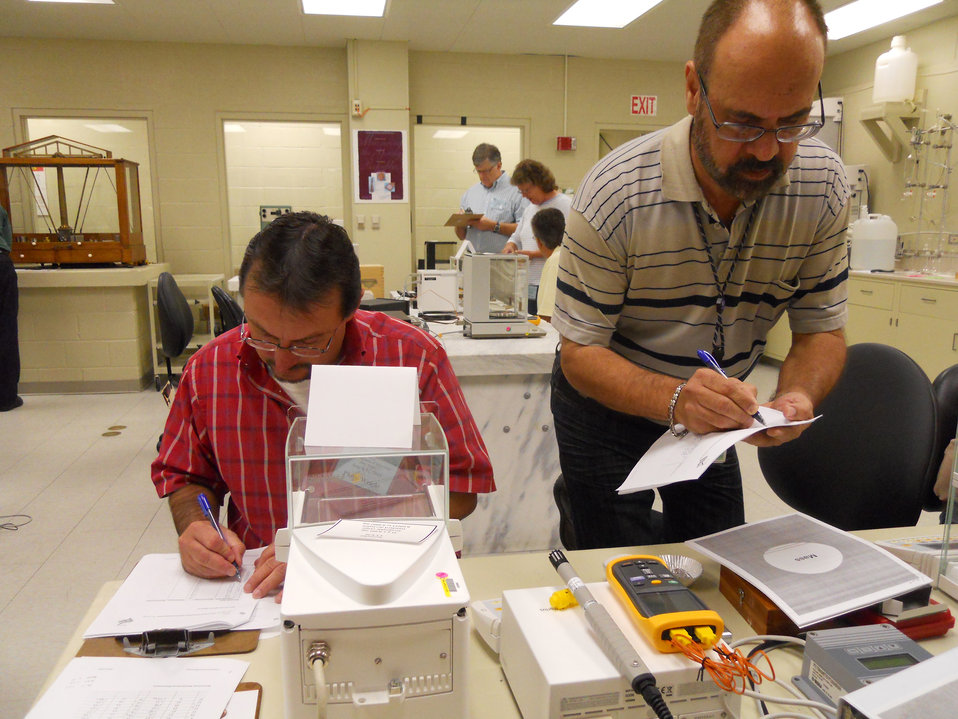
NIST Office of Weights and Measures Receives Important 'Continuing Education' Accreditation

Instructors José Torres and Phil Wright perform measurements during a dry run of the new Fundamentals of Metrology course being offered by the NIST Office of Weights and Measures.